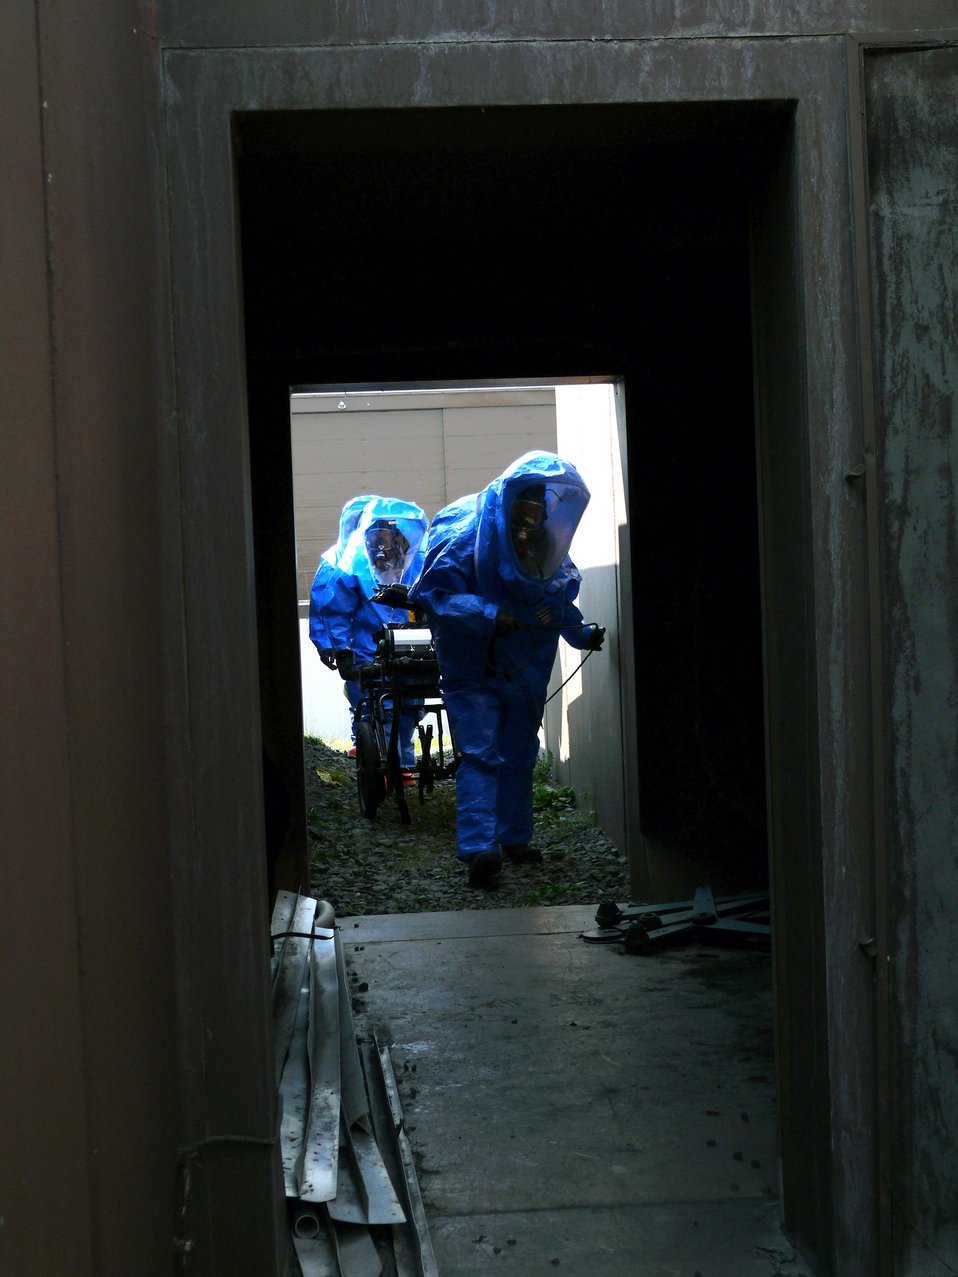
Airmen, Soldiers jointly hone chemical response skills

During training, Airmen and Soldiers enter a bunker housing a simulated chemical weapons lab April 12 at Ramstein Air Base, Germany. Responders from the Army and Air Force are training together at a chemical response exercise so they can respond as a single unit if needed.